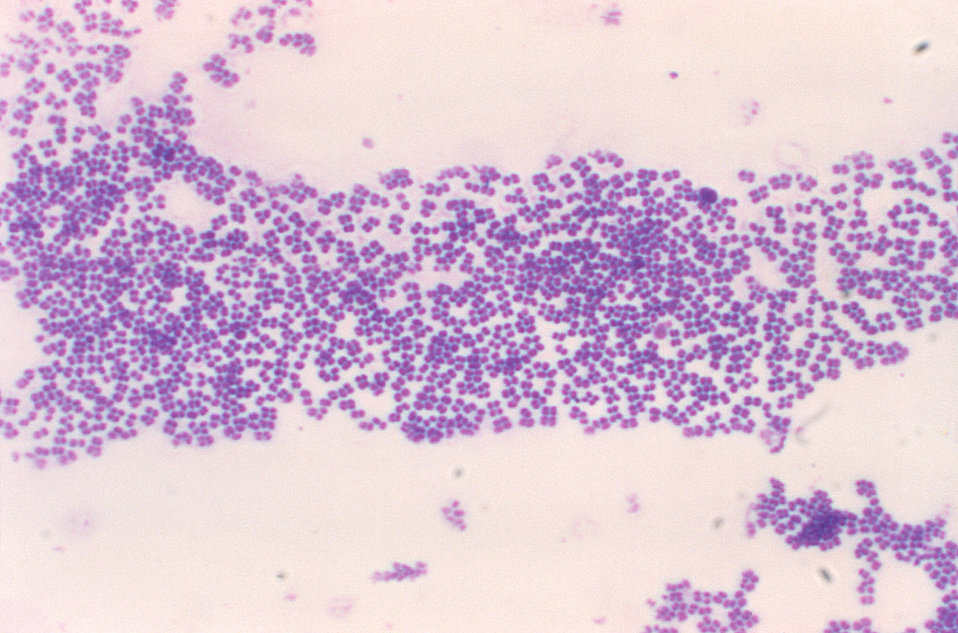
Magnified 320X, this photomicrograph revealed the presence of many Gram-positive Micrococcus mucilaginosis bacteria.